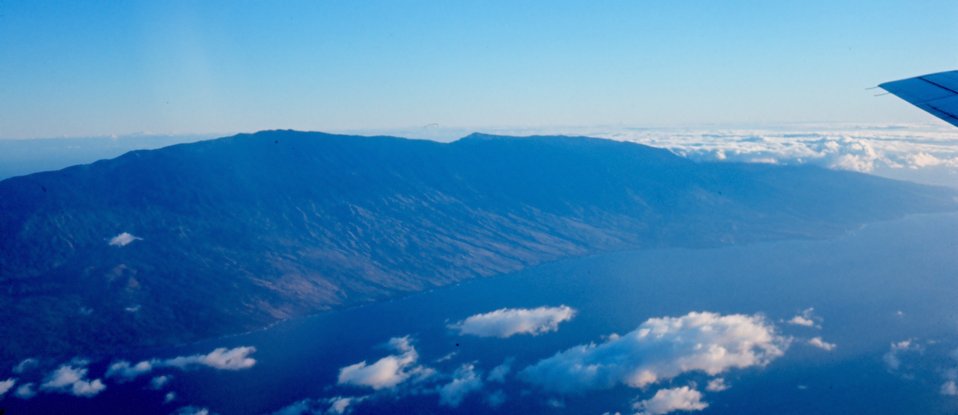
Aerial view of a Hawaiian island